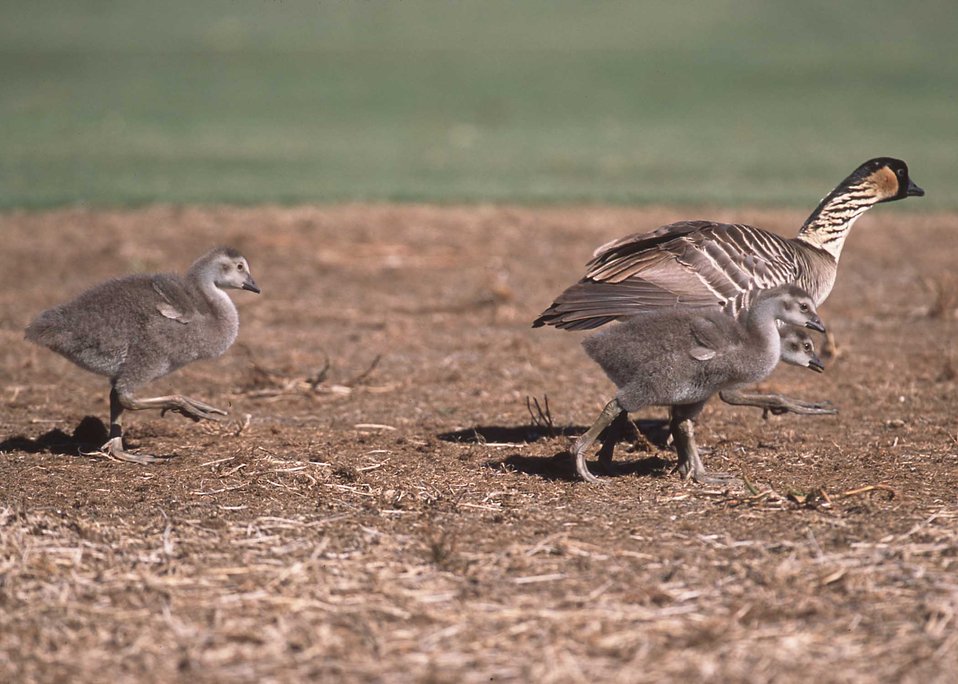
Nene goose in Hawaii.